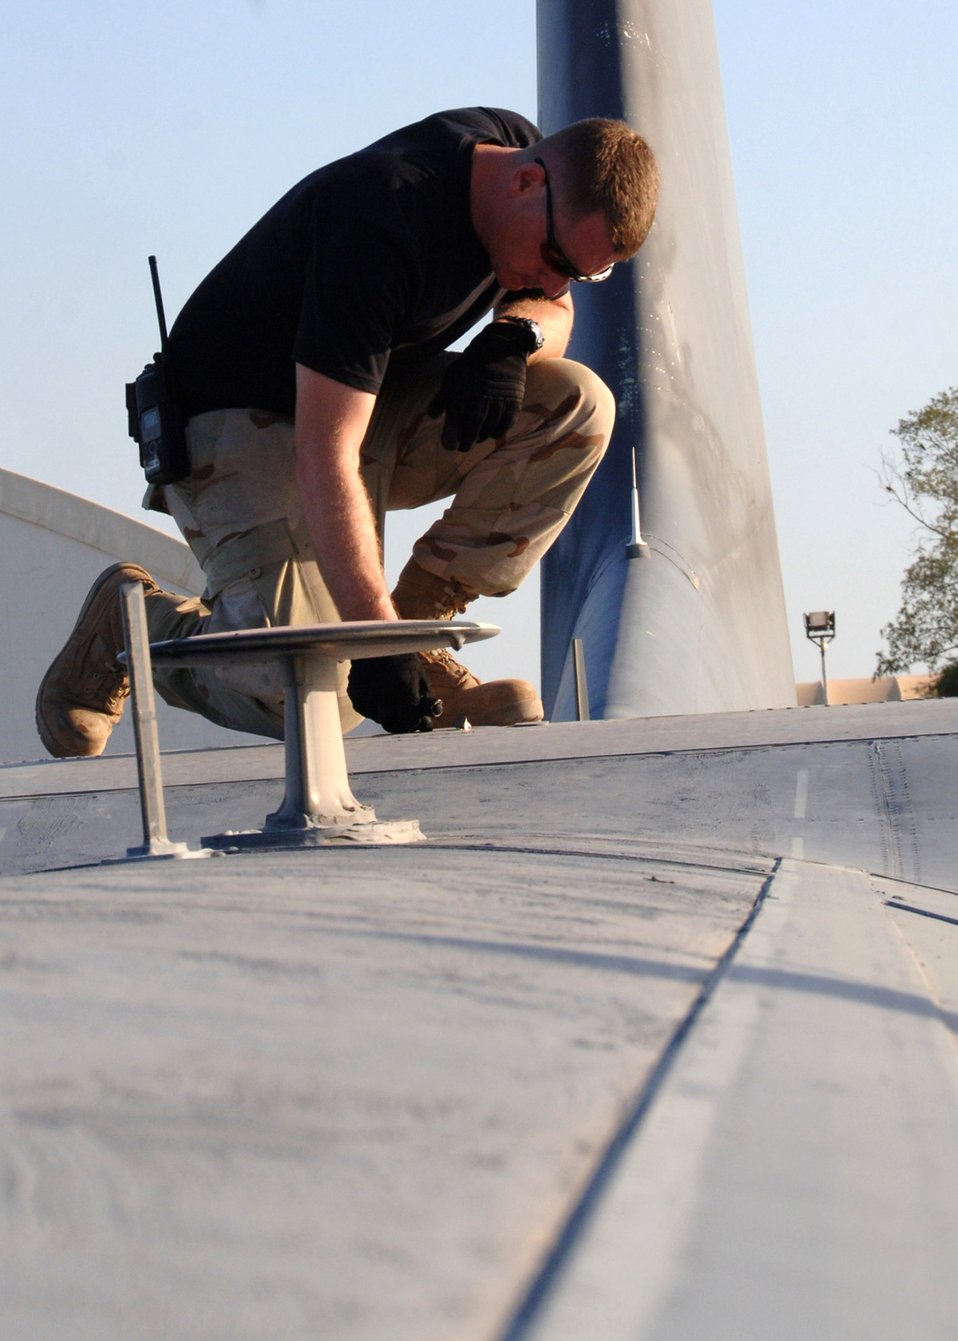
Preflight inspection

Staff Sgt. James Rodman inspects the top wings of a C-130 Hercules as part of a preflight inspection Oct. 22 at Camp Lemonier, Djibouti. Sergeant Rodman is a crew chief for the 81st Expeditionary Rescue Squadron.